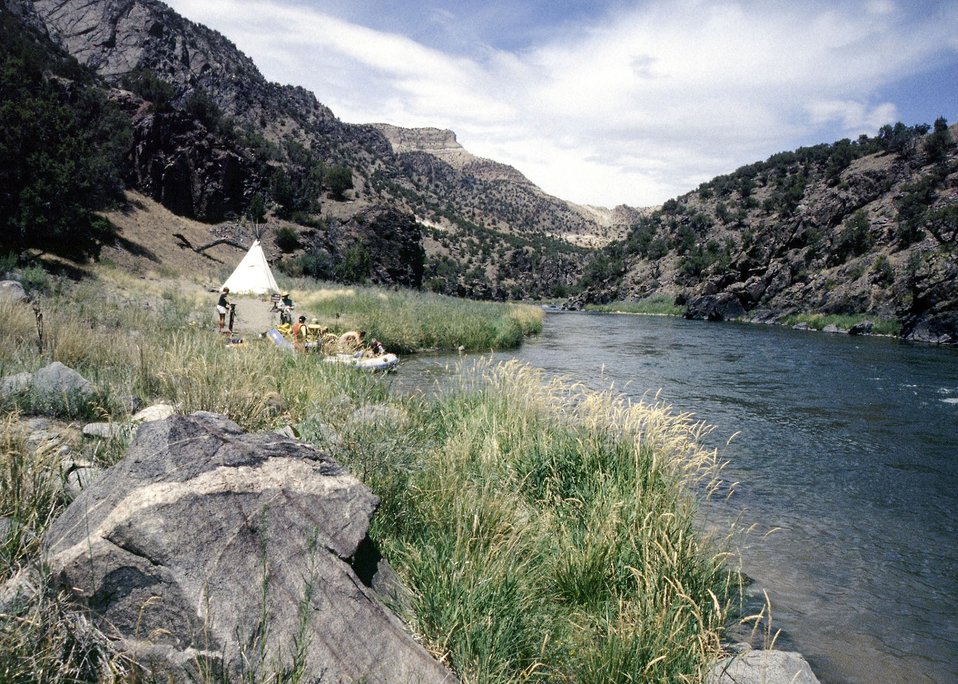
Rafting